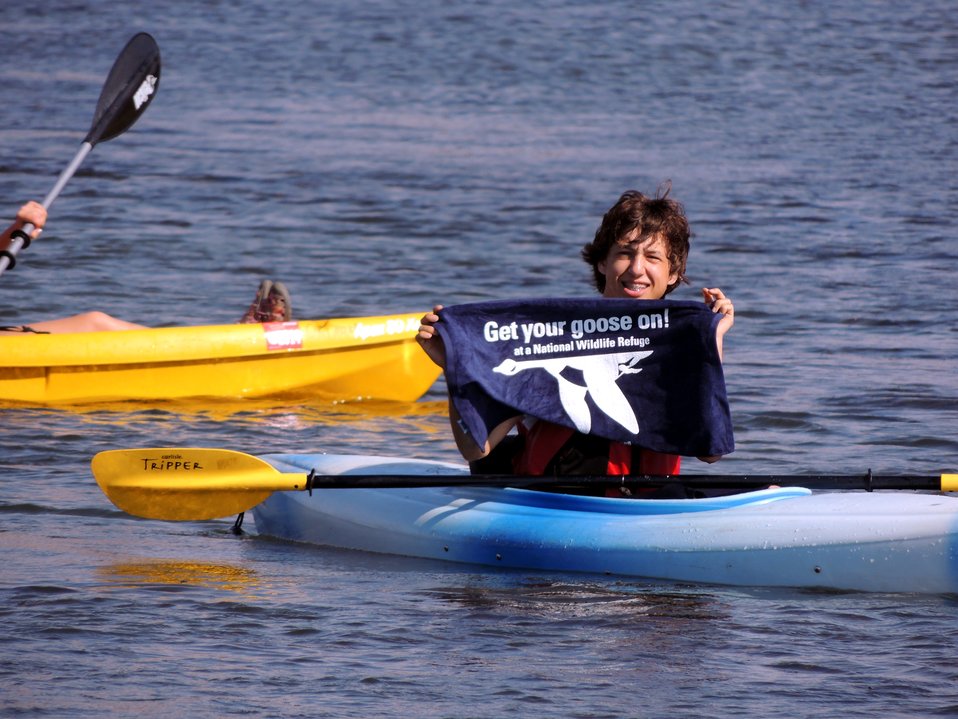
Get Your Goose On!

Wichita Mountains National Wildlife Refuge in Oklahoma.